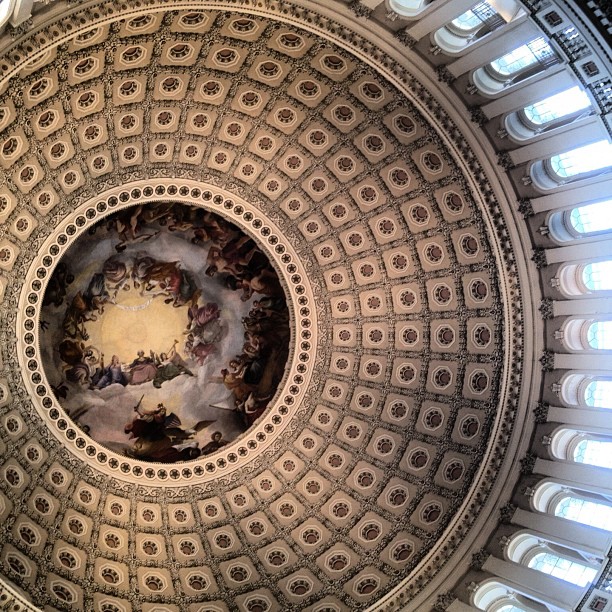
Sunny Friday afternoon in the Capitol Rotunda.